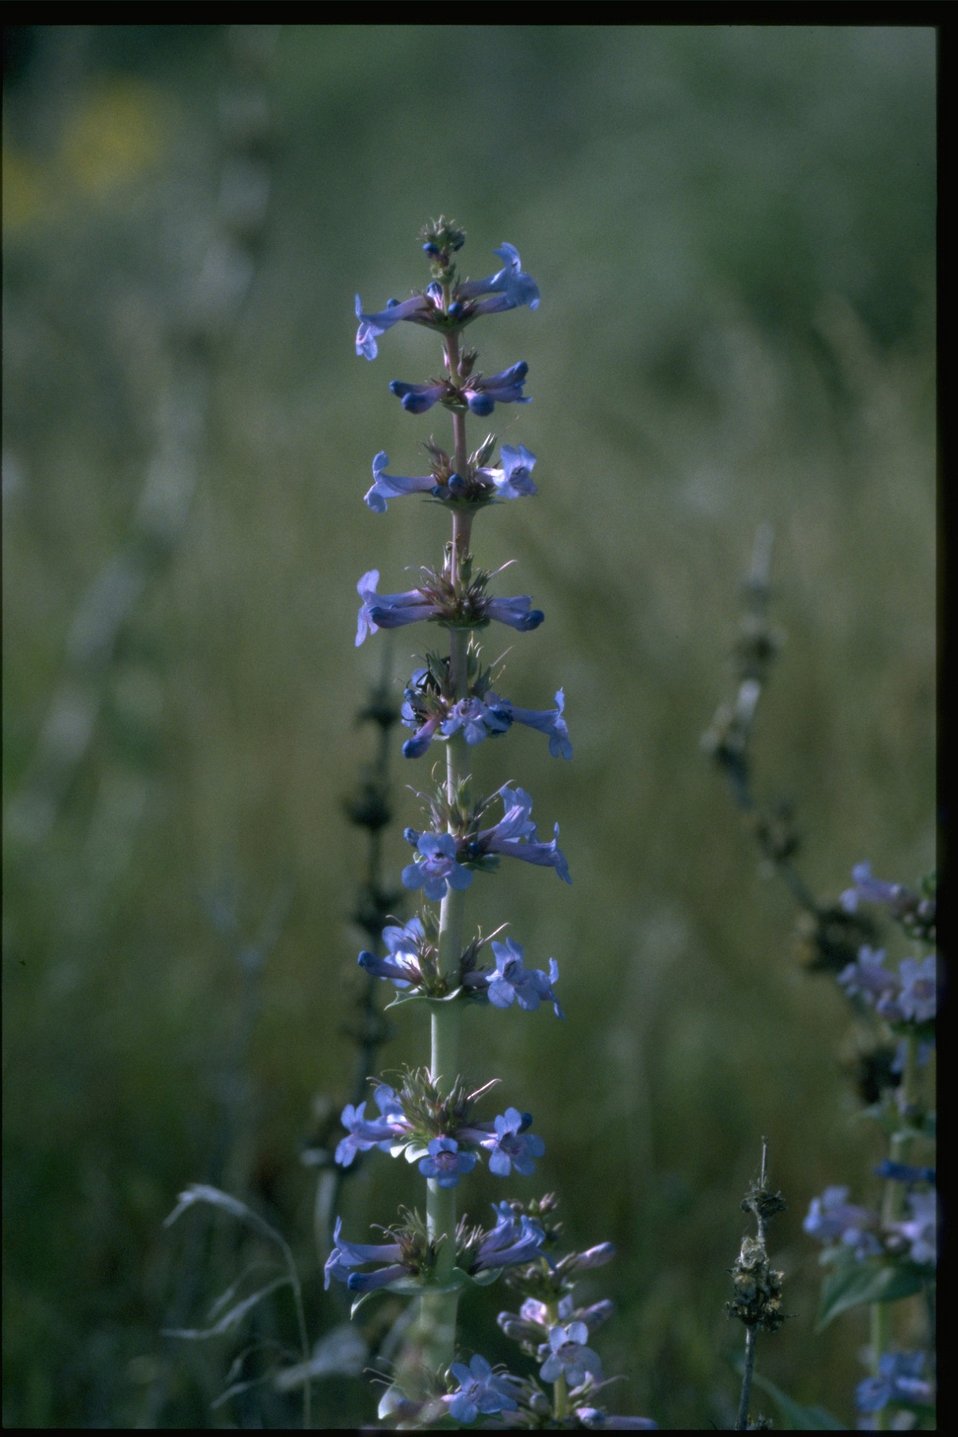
Medium shot of Sand Penstemon (Penstemon acuminatus).